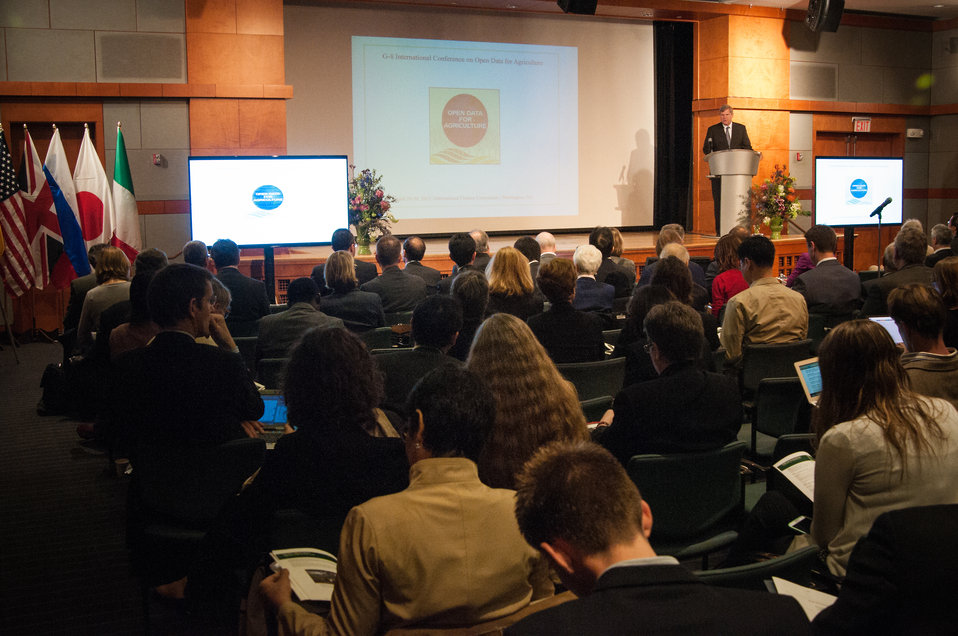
Agriculture Secretary Tom Vilsack makes opening remarks at the G-8 International Conference on Open Data for Agriculture in Washington, D.C. on Monday, Apr. 29, 2013. Secretary Vilsack announced the launch of a new 'virtual community' as part of a suite of actions, including the release of new data, that the U.S. is taking to give farmers and ranchers, scientists, policy makers and other members of the public easy access to publicly funded data to help increase food security and nutrition.